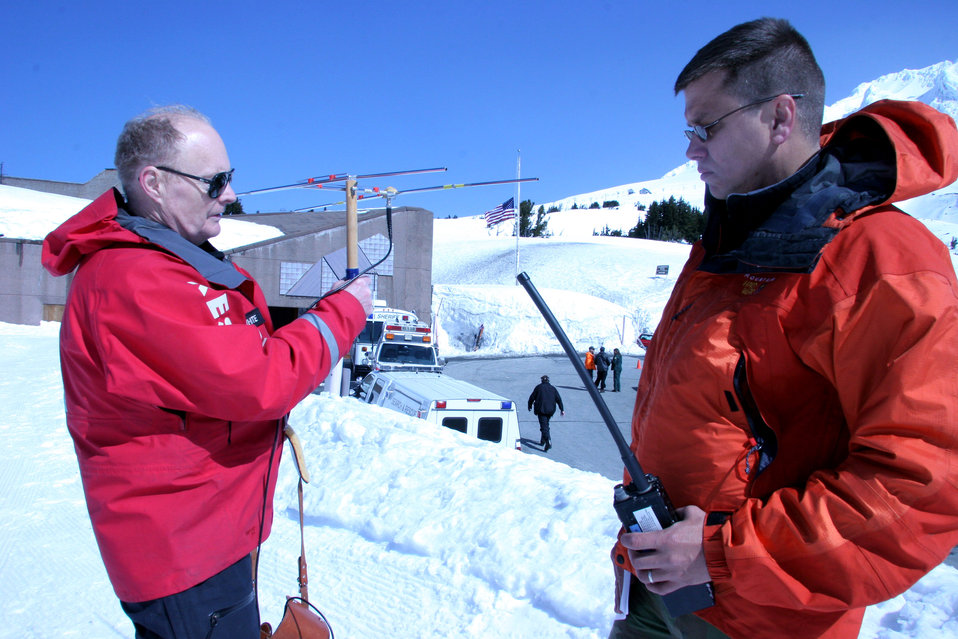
Joint exercise tests reservists' skills

Hal Lillywhite (left) and Capt. Chris Bernard use a directional antenna to track the beacon from mountain locator units worn by